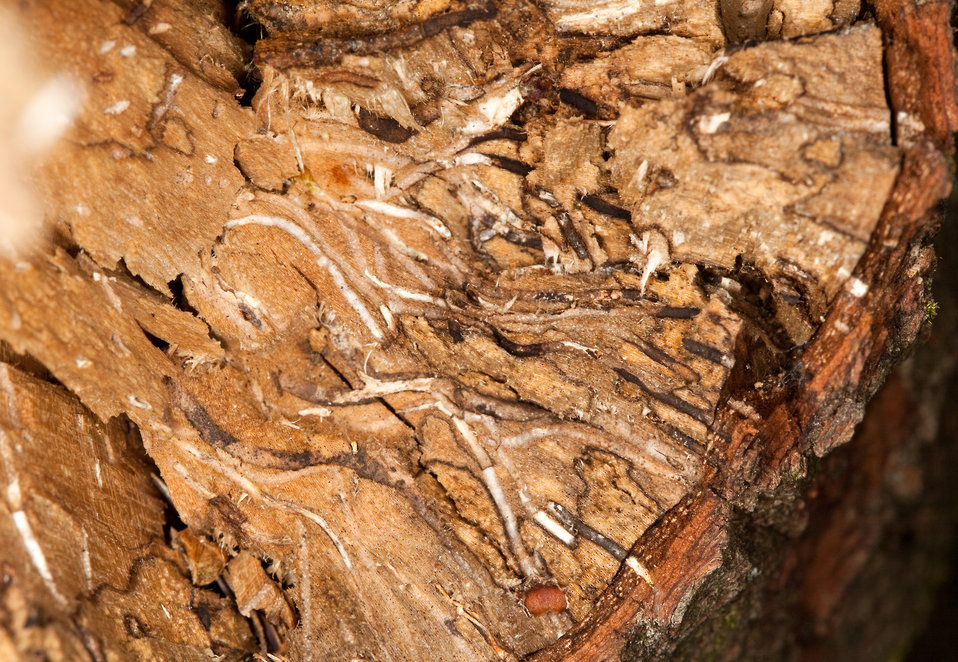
A cross section of a swampbay tree trunk shows the redbay ambrosia beetle’s galleries (white lines) that are filled with the fungus Raffaelea lauricola on May 22, 2012, the cause of laurel wilt disease.